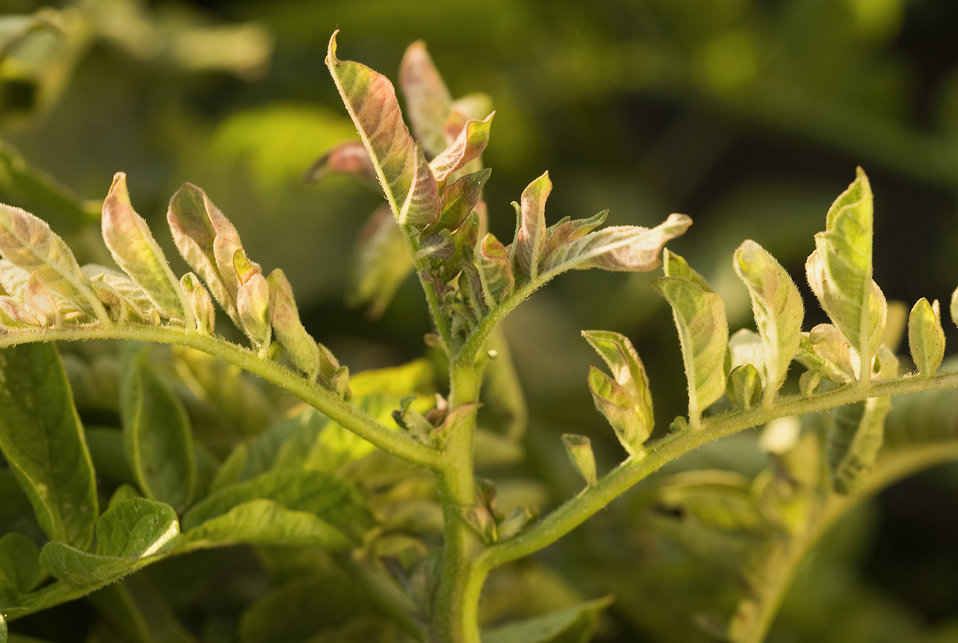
A potato plant showing typical zebra chip symptoms, including rolling up and stunting of the top leaves and purple discoloration on Sept. 19, 2008.